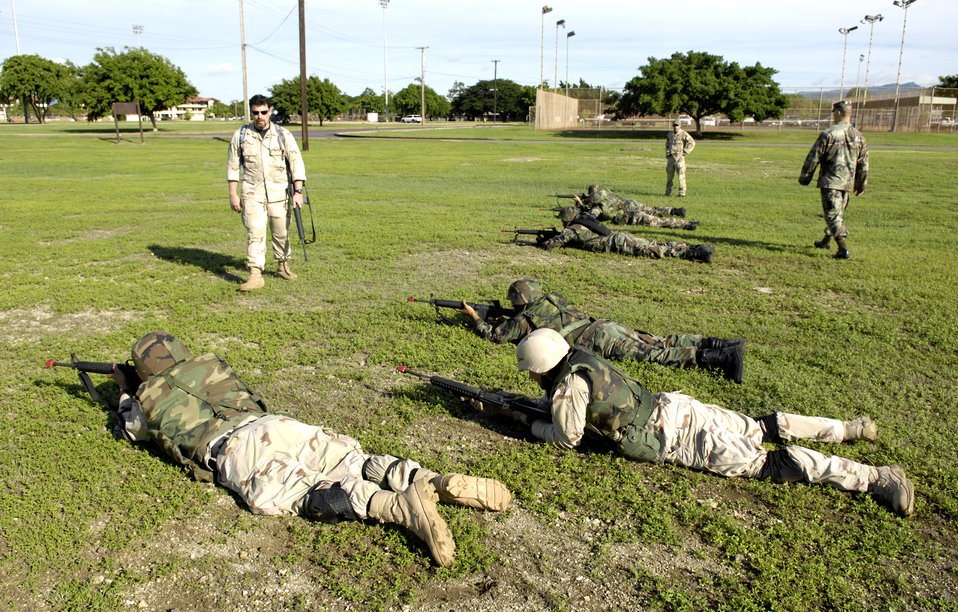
Combat course prepares Airmen for AEF

Instructors go through individual movement techniques Nov. 3 with students from the 15th Airlift Wing during a 3-day Expeditionary Combat Skills Training course at Hickam Air Force Base, Hawaii. The Airmen are preparing for the Air Expeditionary Force 5/6 cycle.